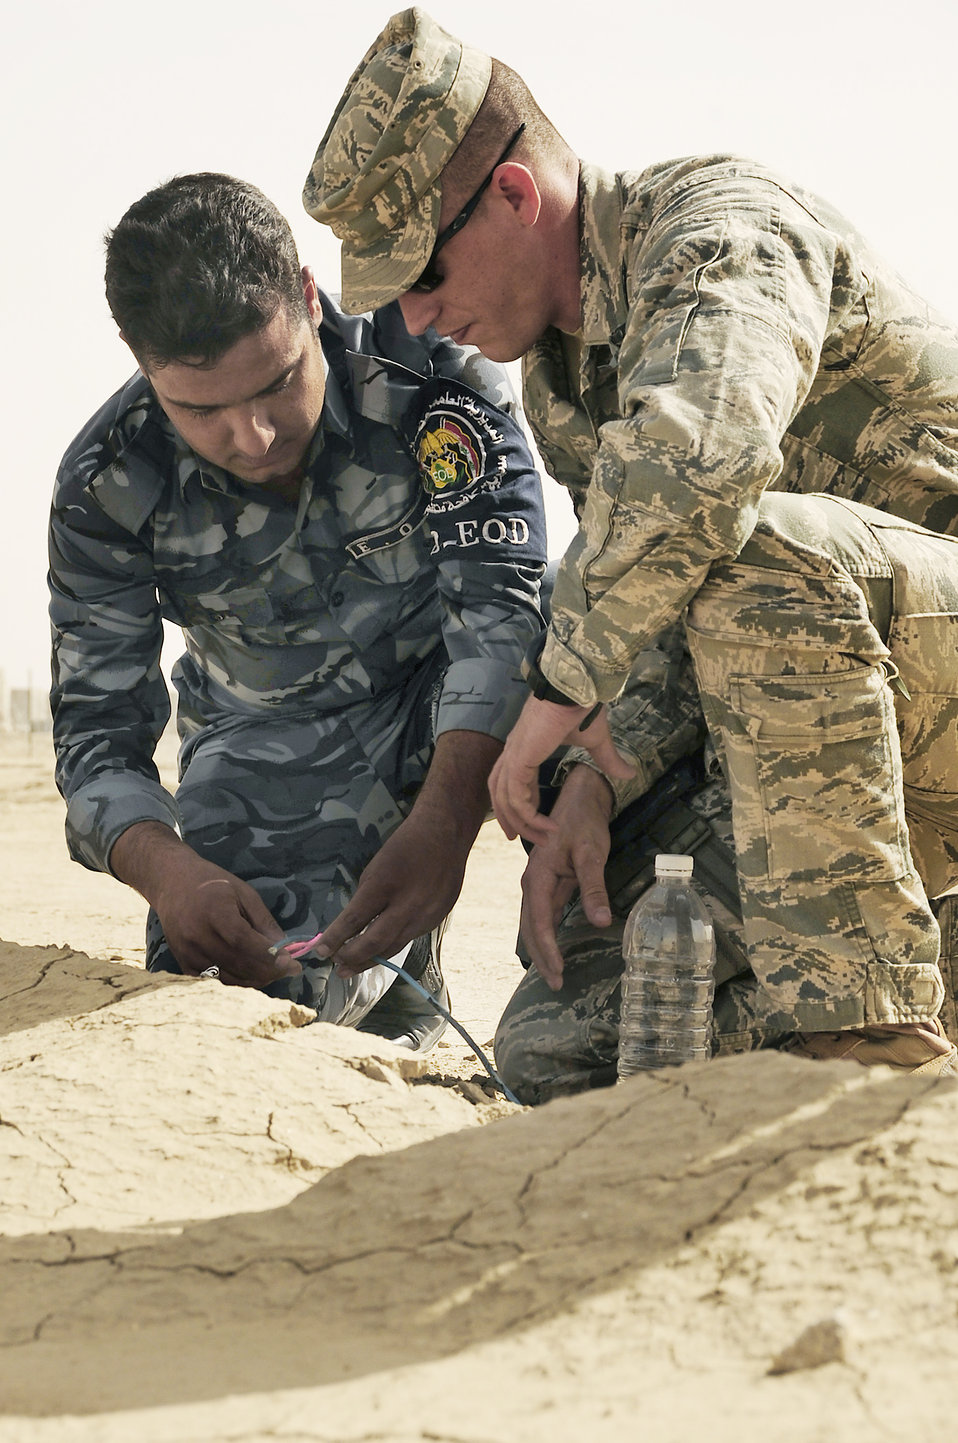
Airmen train Iraqi police

Staff Sgt. Arthur Bigelow advises an Iraqi police explosive ordnance disposal technician as he inerts an improvised explosive device during a training scenario conducted by Air Force EOD members Nov. 4, 2009, at Forward Operating Base Cedar, Iraq. Sergeant Bigelow is a 407th Expeditionary Civil Engineer Squadron EOD technician deployed from Fairchild Air Force Base, Wash.